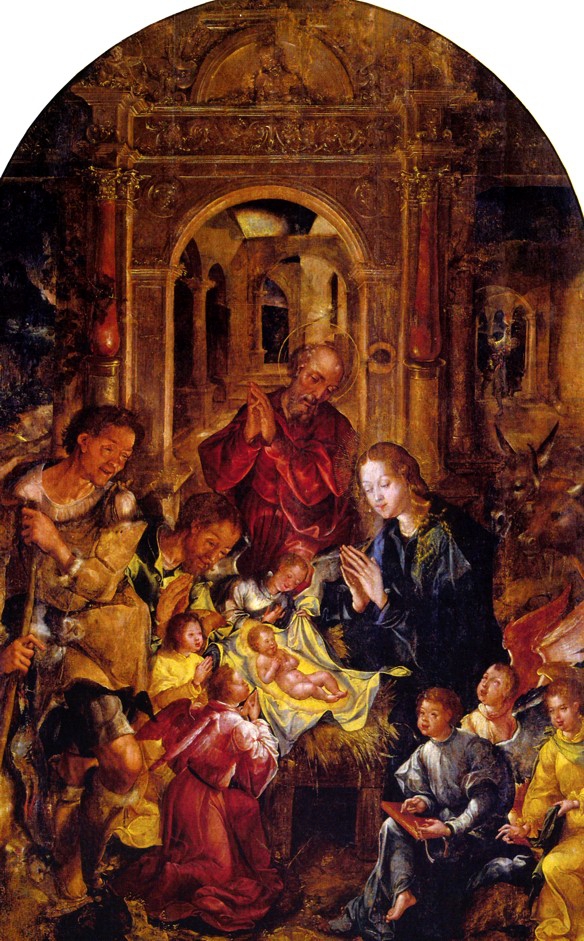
'Adoration of Shepherds', oil on panel by Greg√≥rio Lopes, 1544, Museu de √âvora, Portugal